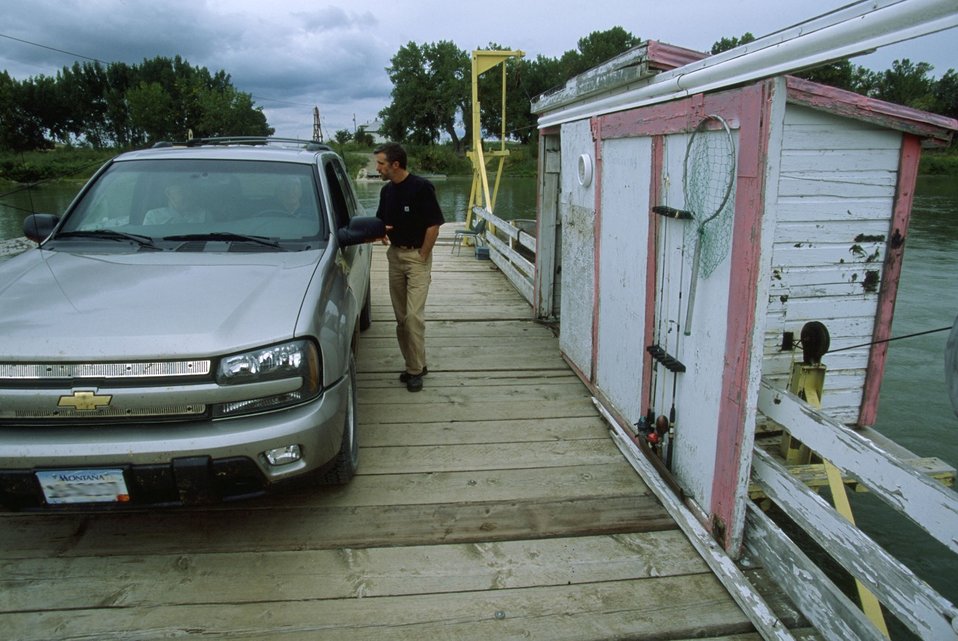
Stafford Ferry across the Upper Missouri River